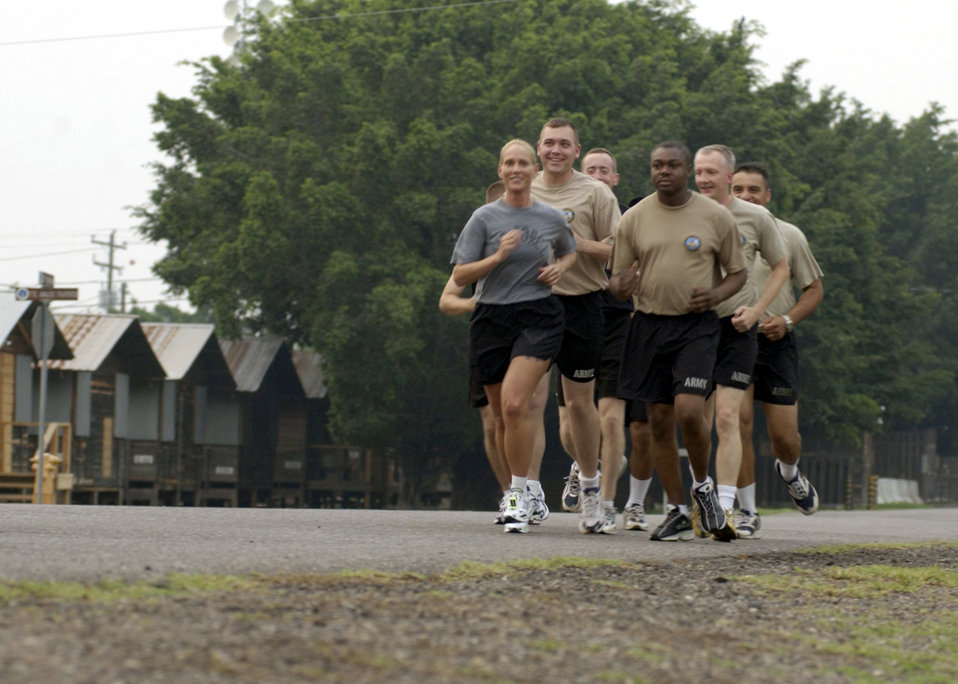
Lieutenant leaves 'footprint' at Soto Cano

SOTO CANO AIR BASE, Honduras -- First Lt. Kellie Courtland leads her running team,